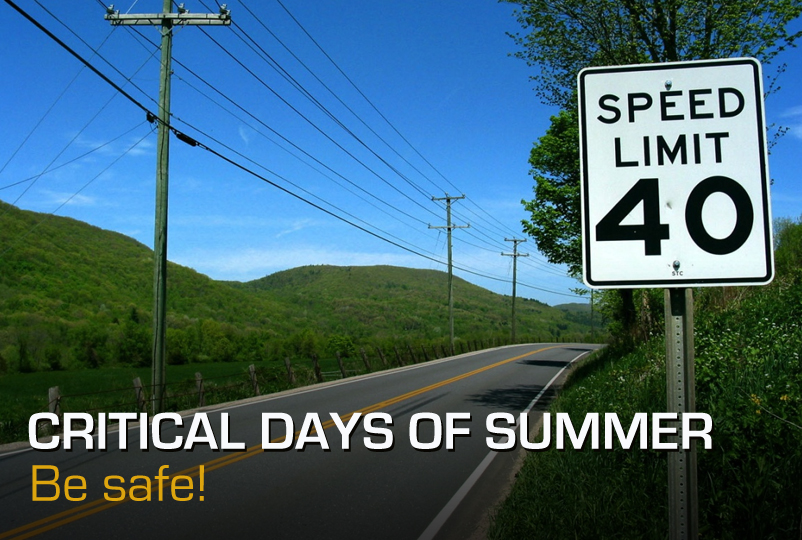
Preserving History